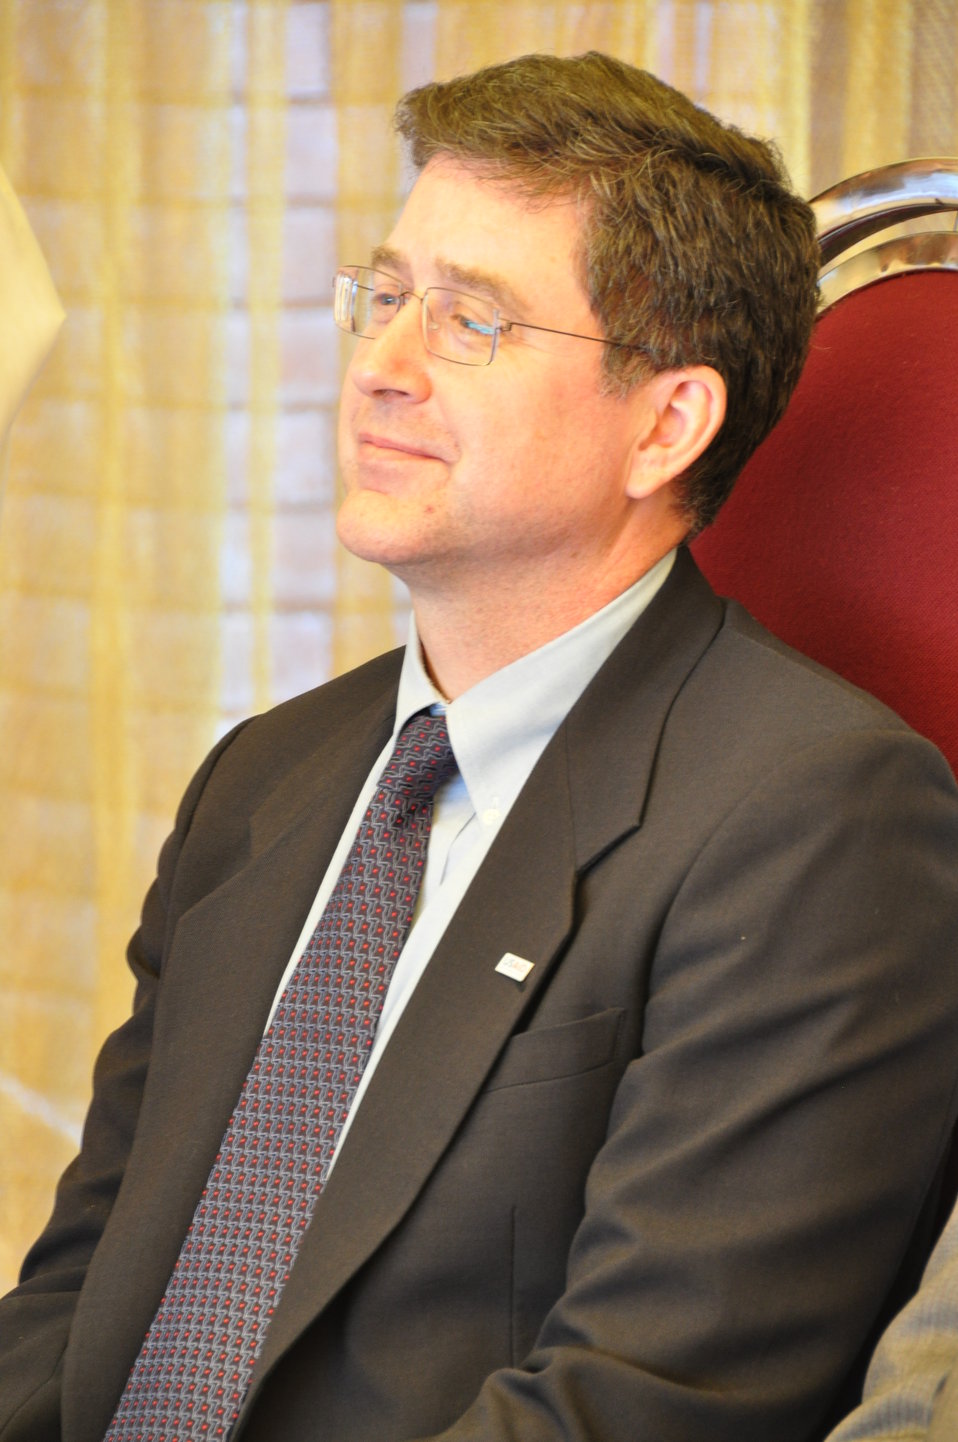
Dhirkot Reconstructed Hospital Inauguration Pakistan Reconstruction Program 15